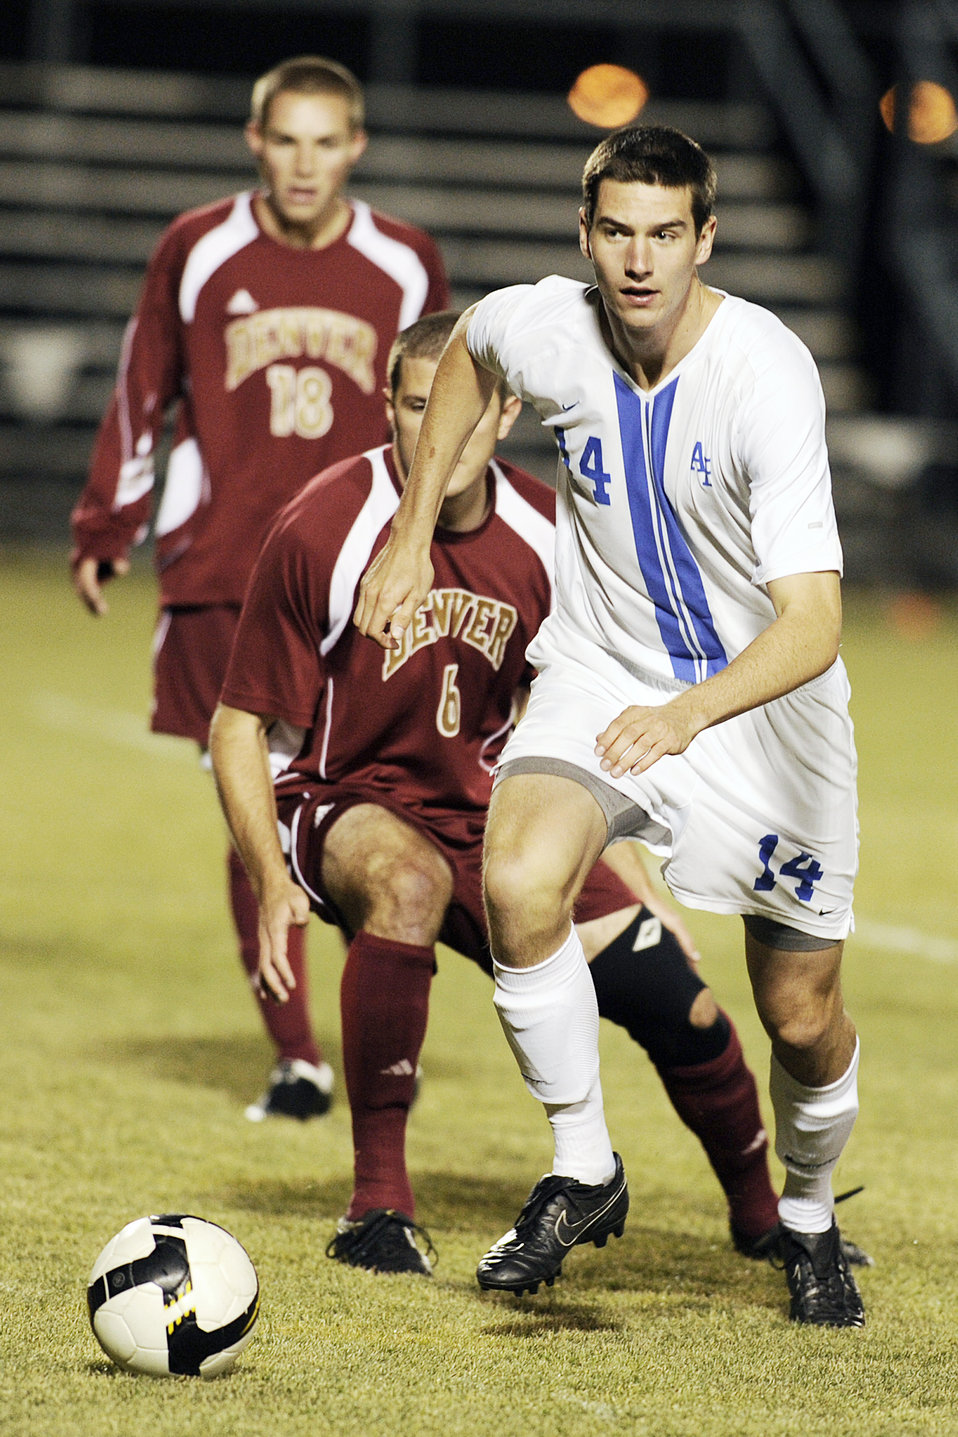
Air Force Academy

U.S. Air Force Academy, CO -- Senior Forward Steven Noller eyes the goal during action against the University of Denver at the Cadet Soccer Stadium Nov 7. Denver defeated the Falcons 2-0 in the regular-season finale for both teams. The Falcons fell to 7-8-1, and 2-5 in league play. The two teams will meet again in five days in the first round of the MPSF tournament on Nov 12 at the University of Denver Stadium. Air Force finished the season with a 5-1-1 record at home, and honored its seven seniors in a pre-game ceremony celebrating the final home game of their career.